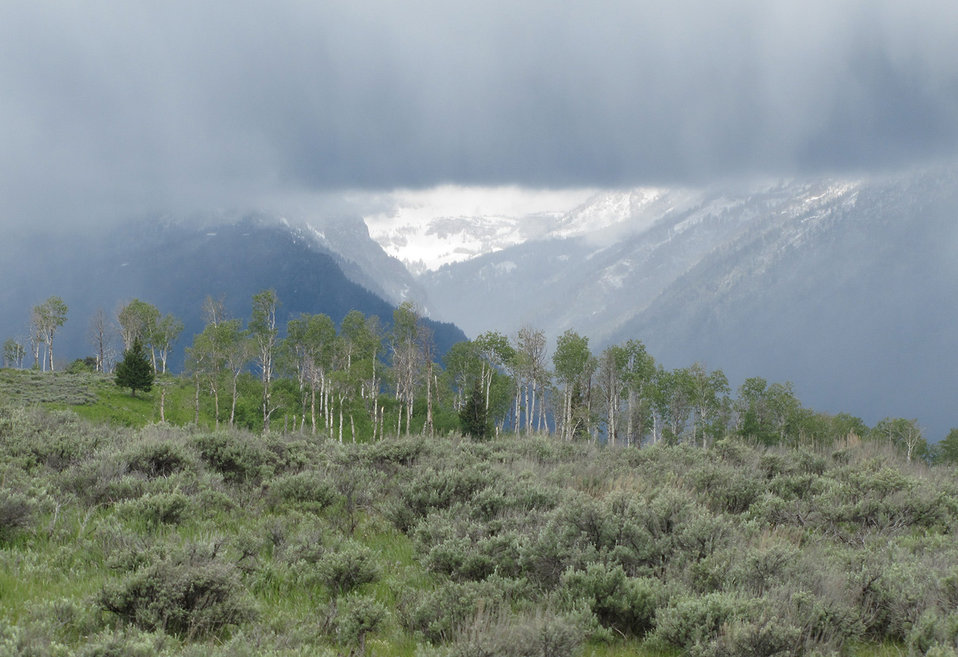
Fresh Dusting of Snow

A cloud curtain hangs above a group of aspen with freshly snow-dusted mountains in the background on June 18 (2014), three days before the first official day of summer. Snow can fall any month of the year here at the National Elk Refuge!